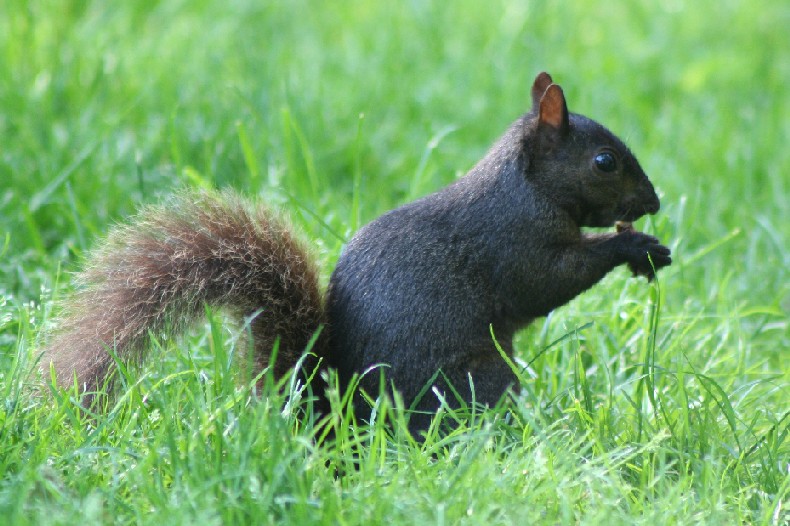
A Sciuridae Deutsch: Ein Hörnchen